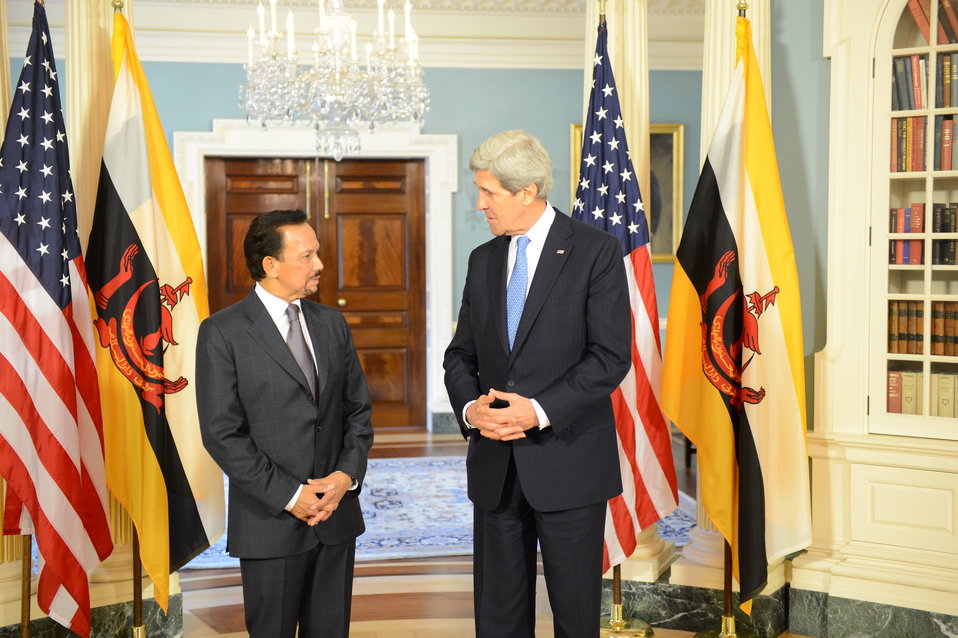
Secretary Kerry Meets With Bruneian Sultan Hassanal Bolkiah

U.S. Secretary of State John Kerry meets with Bruneian Sultan Hassanal Bolkiah at the U.S. Department of State in Washington, D.C., on March 11, 2013.